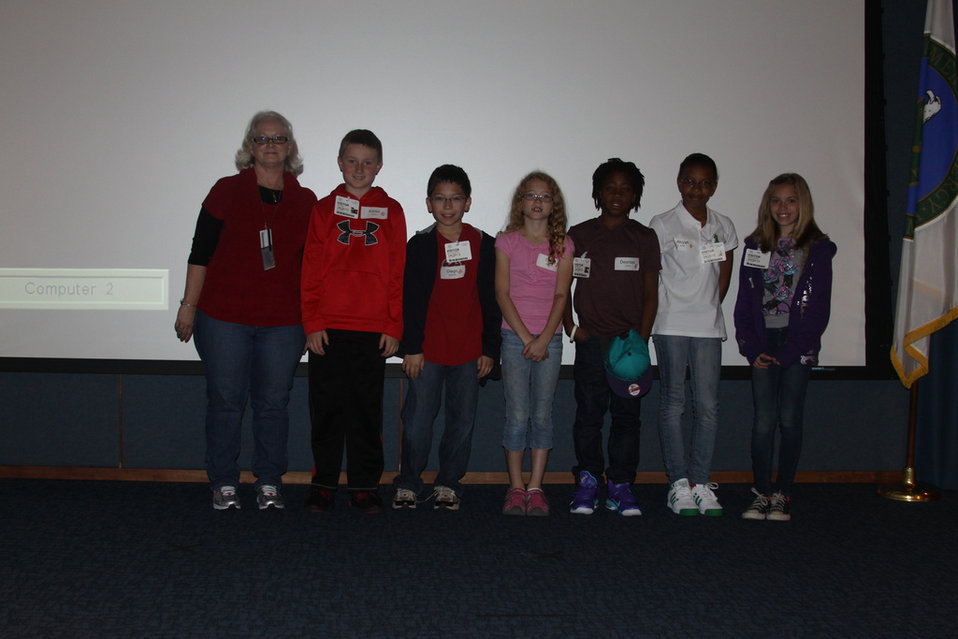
Karen's Group